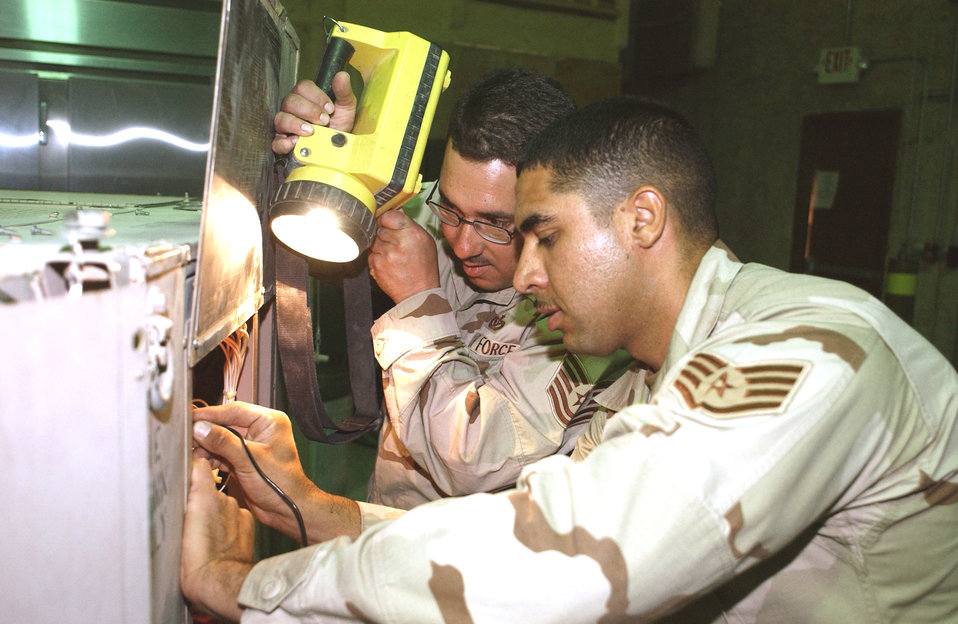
HVAC helps provide combat airpower for America

Tech. Sgt. Jeff Sena holds the light while Staff Sgt. Adrian Nevarez examines wires in an environmental control unit they are troubleshooting Oct. 2. The Airmen are heating, ventilation and air conditioning flight technicians with the 332nd Expeditionary Civil Engineer Squadron at Balad Air Base, Iraq. Sergeant Sena is deployed from Cannon Air Force Base, N.M., and Sergeant Navarez is deployed from Hill AFB, Utah.